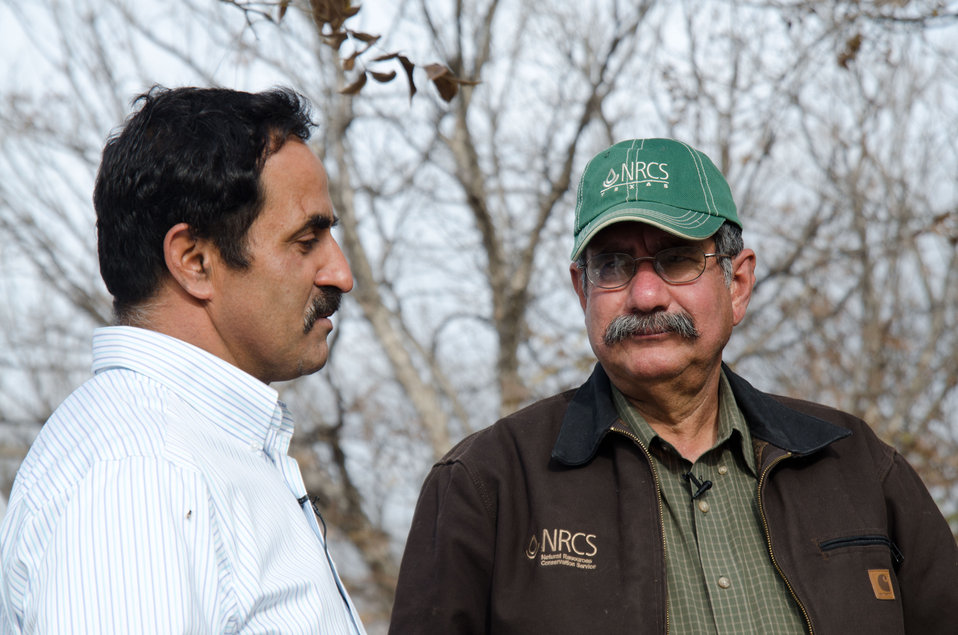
Arrowhead Farms owner Mr. Akram Mohammad (left) and Natural Resources and Conservation Service (NRCS) District Conservationist J.M. Villarreal (right) talk about the challenges of past year, at Mr Mohammad's pecan farm, in Crystal City, TX, on Friday, Deember. 9, 2011. The 719 acre farm with 10,000 trees, features two orchards with underground micro irrigation system that feeds water to the roots of 4,380 pecan trees on 146 acres. Mr. Mohammad said, “USDA (U.S. Department of Agriculture) was essential to my business and trees surviving the recent exceptional drought. The trees were stress free thanks to underground micro-irrigation. This is essential to the future growth of Texas agriculture and good for America.” U.S. Department of Agriculture’s (USDA) Environmental Quality Initiative Program (EQIP) awarded Mr. Mohammad a $130,000 grant in 2008. He provided $26,000 for the balance of the $156,000 total cost to install a 146-acre underground micro-irrigation for 4,380 trees.